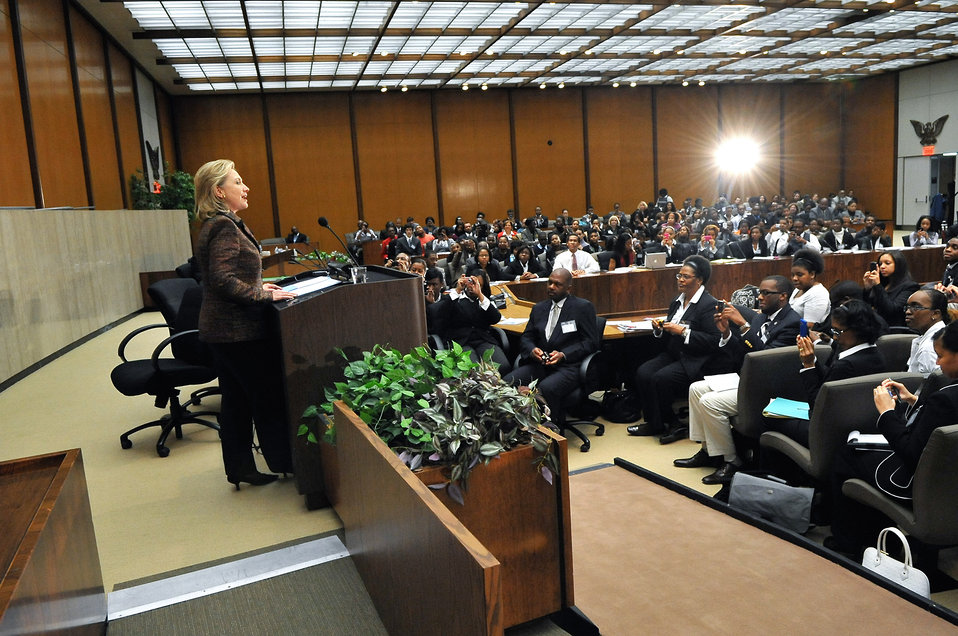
Secretary Clinton Delivers Remarks at Foreign Policy Briefing

U.S. Secretary of State Hillary Rodham Clinton delivers remarks at a U.S. Foreign Policy Briefing for students from Historically Black Colleges and Universities in the Loy Henderson Auditorium at the U.S. Department of State in Washington, D.C., on February 23, 2011.